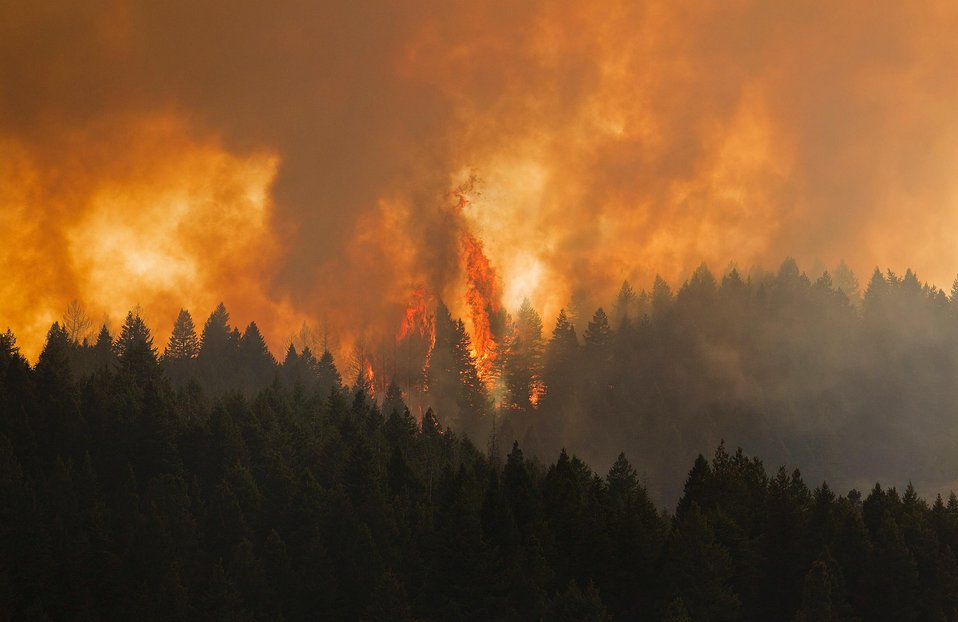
The Elk Complex Fire in the Boise National Forest near Pine, ID began on Aug. 08, 2013 by lightning has consumed approximately 98,413 acres and is approximately 5% contained.